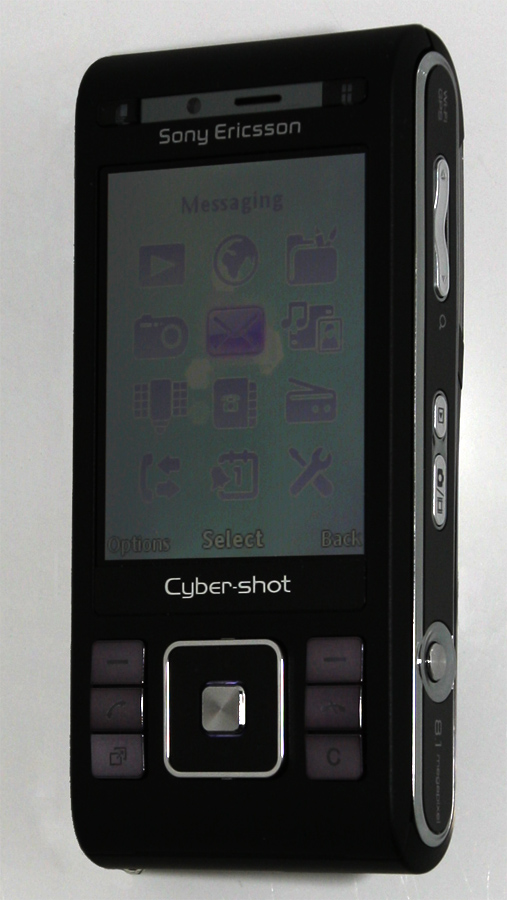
Sony Ericsson C905